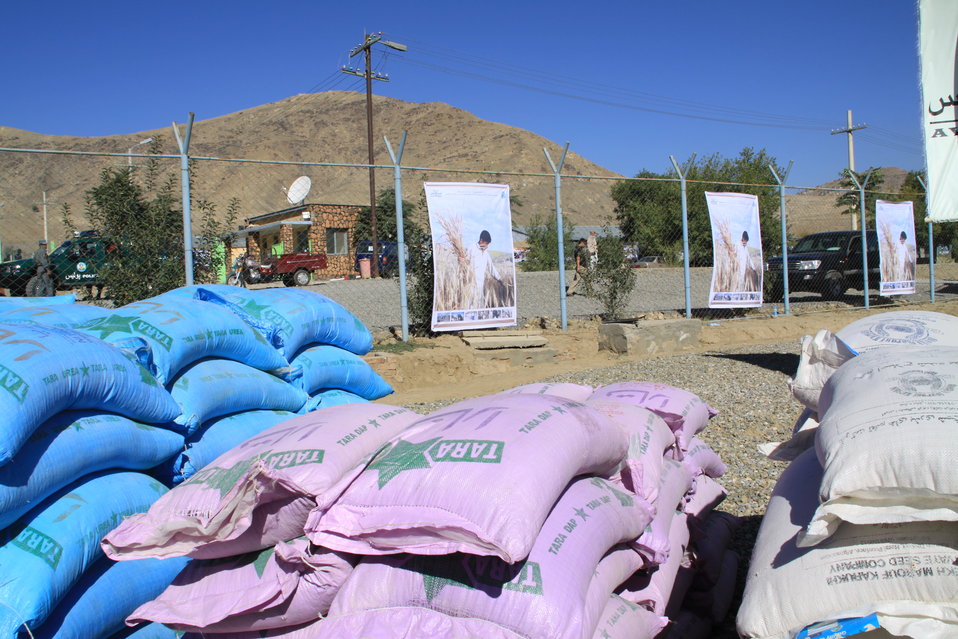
AVIPA Plus Wheat Seed Distribution 101005

US Ambassador Karl Eikenberry and USAID Acting Mission Director Kevin Brownawell joined the Minister of Agriculture, Irrigation and Livestock, H.E. Minister Mohammed Rahimi in signing a Memorandum of Understanding and distributing vouchers to area farmers for wheat and fertilizer.